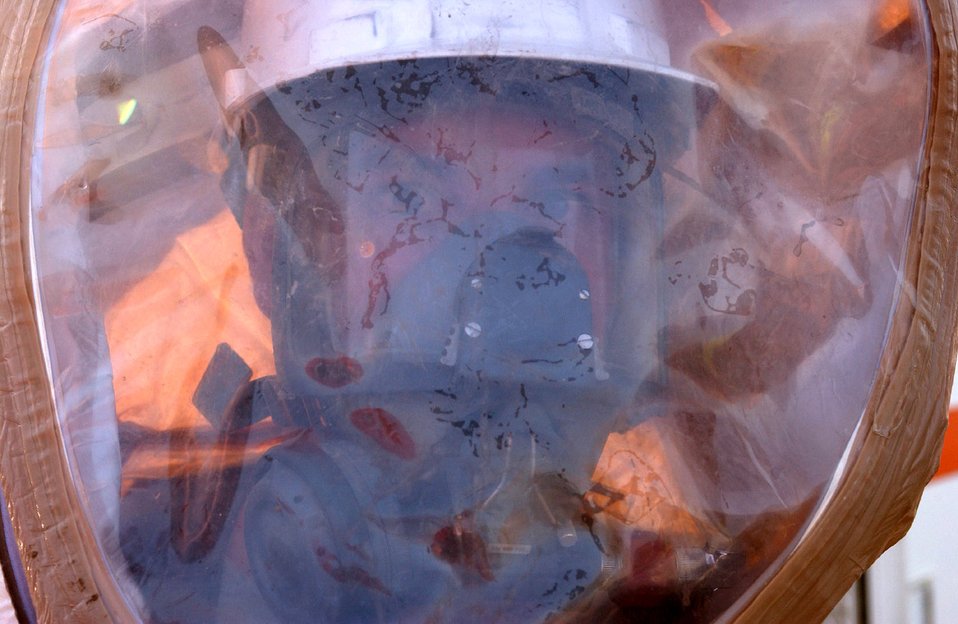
Deployed firefighters modern day dragon slayers

BAGHDAD, Iraq -- Airman 1st Class Matthew Metzger is fully encapsulated in a protective suit as he prepares to enter a hazardous incident exercise evaluation area here. Airman Metzger is assigned to the 447th Expeditionary Civil Engineer Squadron and is deployed from Kadena Air Base, Japan.